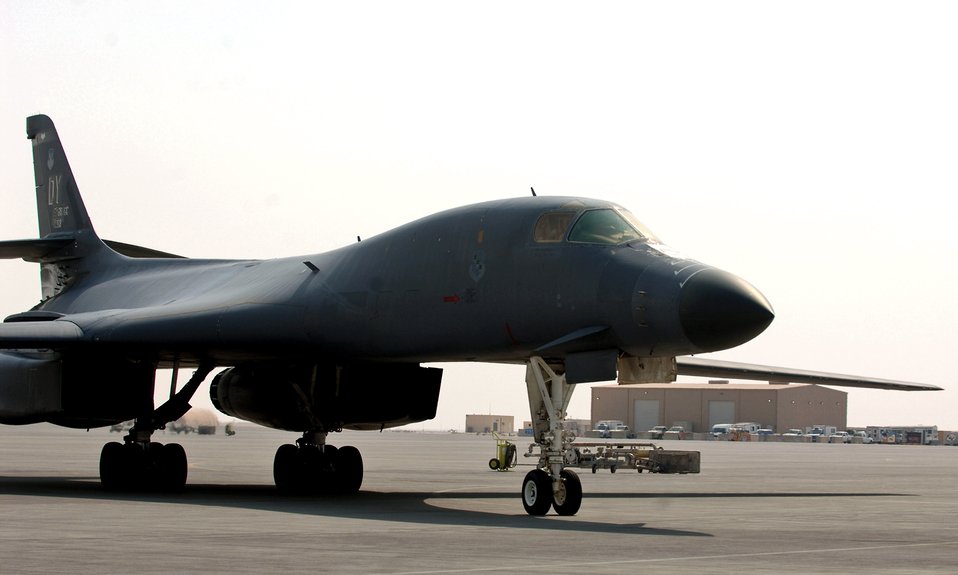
Airpower Summary for July. 12, 2008

An Air Force B-1B Lancer awaits its next mission at a base in Southwest Asia. B-1s fly close-air-support missions for both Operation Enduring Freedom and Operation Iraqi Freedom.